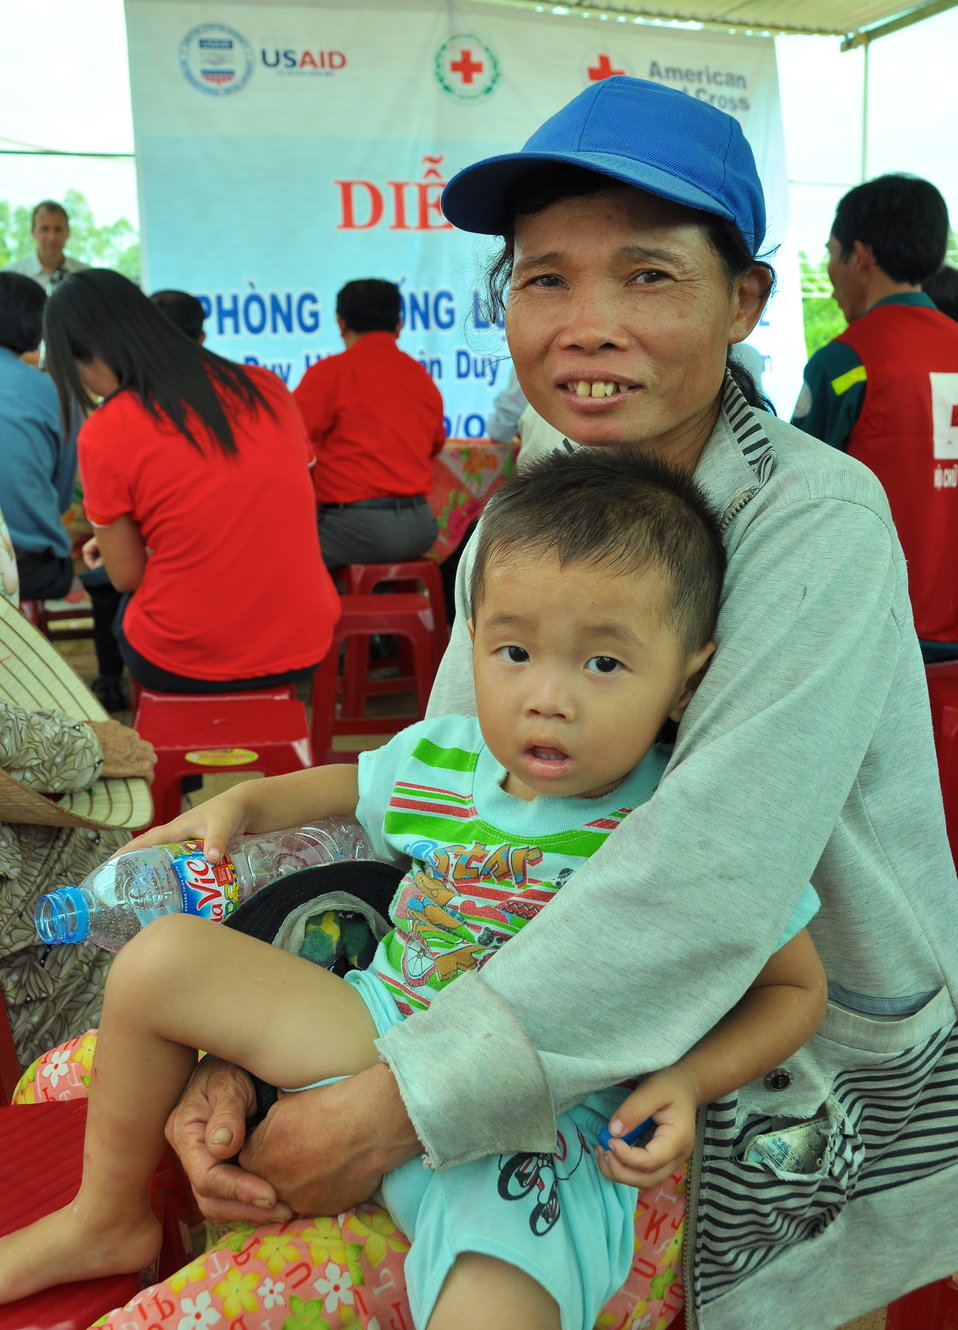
USAID, Red Cross Support Disaster Response Drill in Duy Hoa Commune, Quang Nam Province

Duy Hoa Commune, Quang Nam Province
December 5, 2012